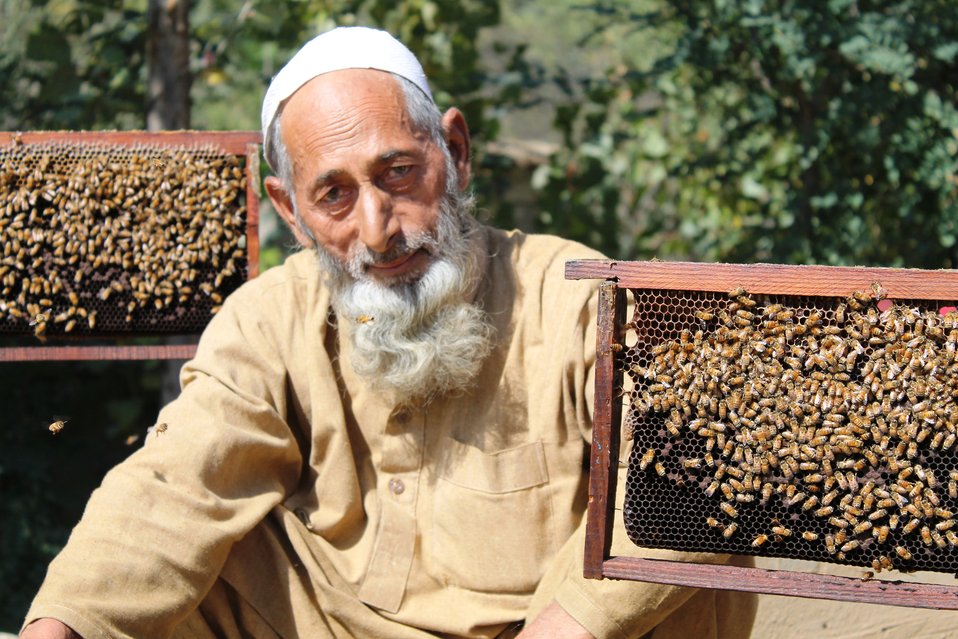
Honey Value Chain Development Initiative under the USAID's Entrepreneurs Project

Swat, October 17, 2012: Fazal Wahid, 66, is creatively managing the European bees to increase his production and sale of honey under the USAID's Entrepreneurs Project.